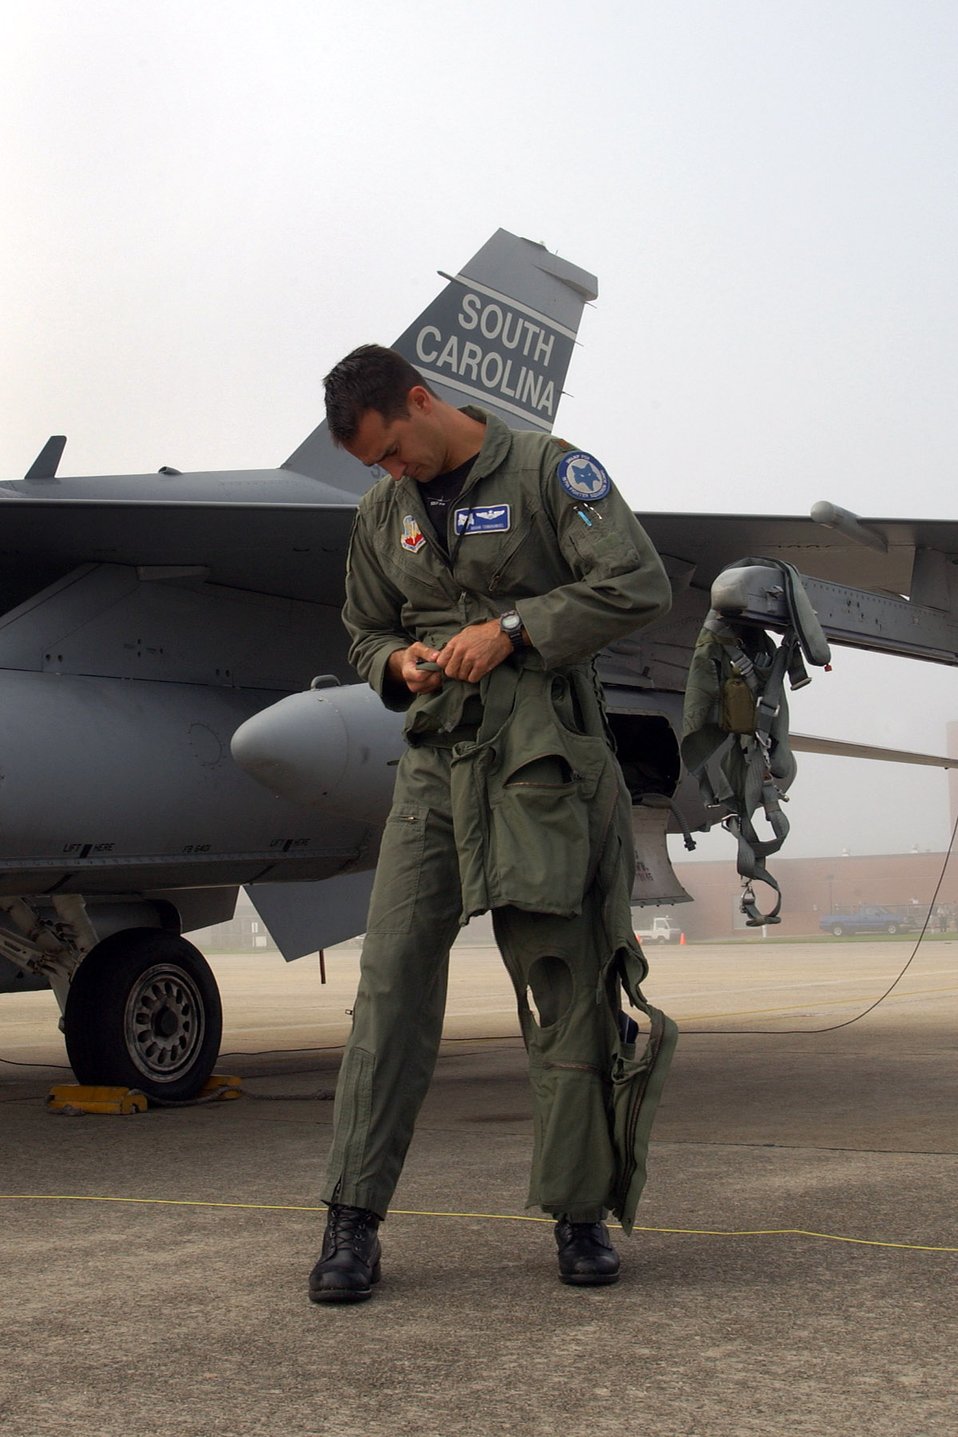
Guard support

A pilot straps on his flight gear in preparation for takeoff from McEntire Air National Guard Base, S.C., Aug. 28. Airmen from the 169th Fighter Wing are filling an air expeditionary force role for Pacific Air Forces.